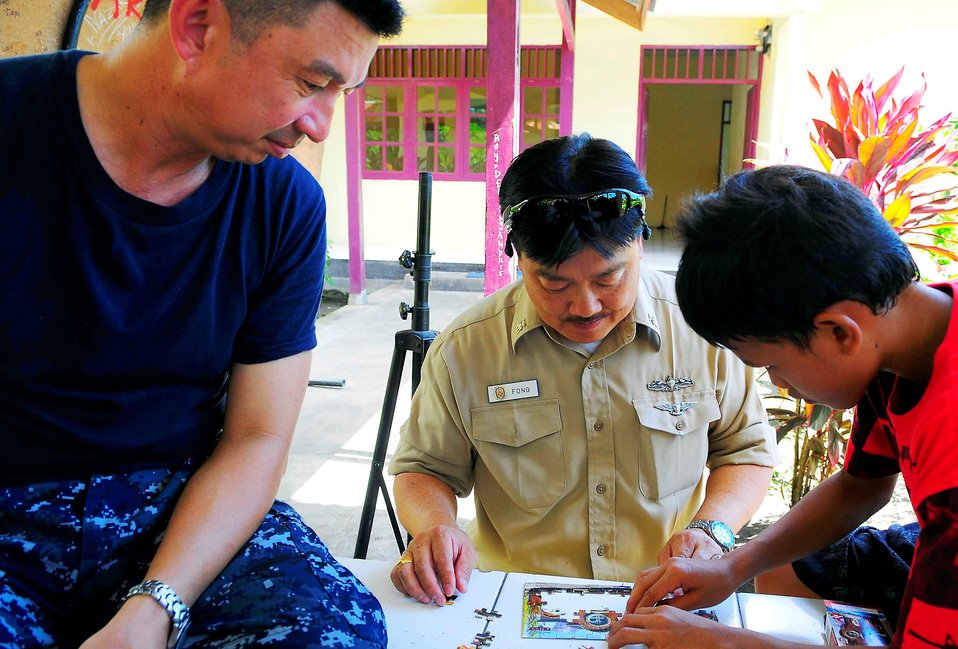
Command Master Chief, Master Chief Hospital Corpsman (SW/FMF) Noel Manlapaz and Master Chief Culinary Specialist (SW/AW) Jack Fong Piece Togther a Puzzle With an Indonesian Boy

Command Master Chief, Master Chief Hospital Corpsman (SW/FMF) Noel Manlapaz, left, and Master Chief Culinary Specialist (SW/AW) Jack Fong piece together a puzzle with a boy during a community service event at the Rumah Sejahtera Bagi Anak Orphanage, in support of Pacific Partnership 2010 in Tobelo, Indonesia, on July 14, 2010. Pacific Partnership 2010 is the fifth in a series of annual U.S. Pacific Fleet endeavors conducted in Indonesia as a disaster relief exercise to strengthen regional partnerships.